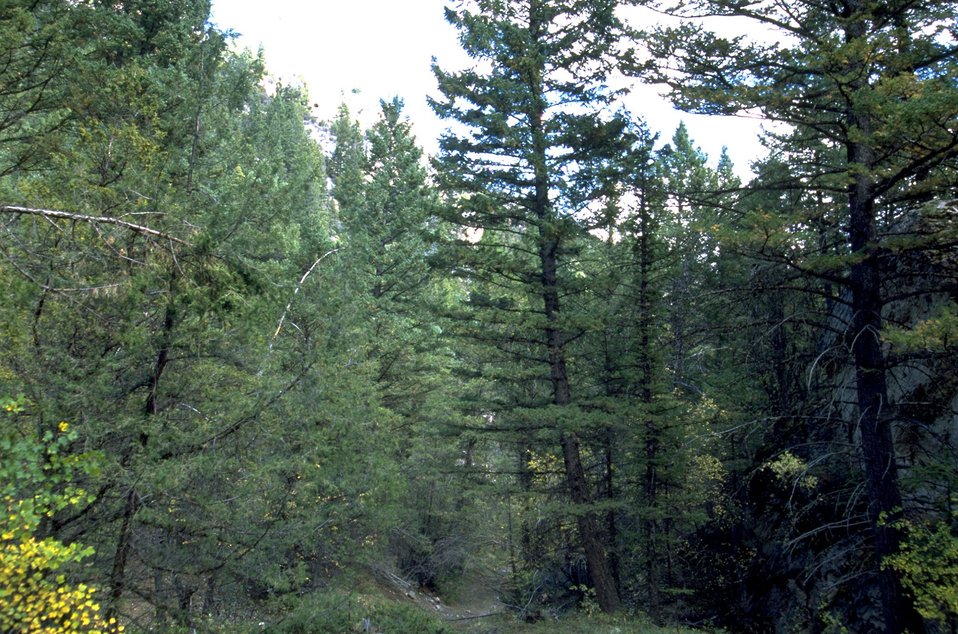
Trees in Lauren Canyon